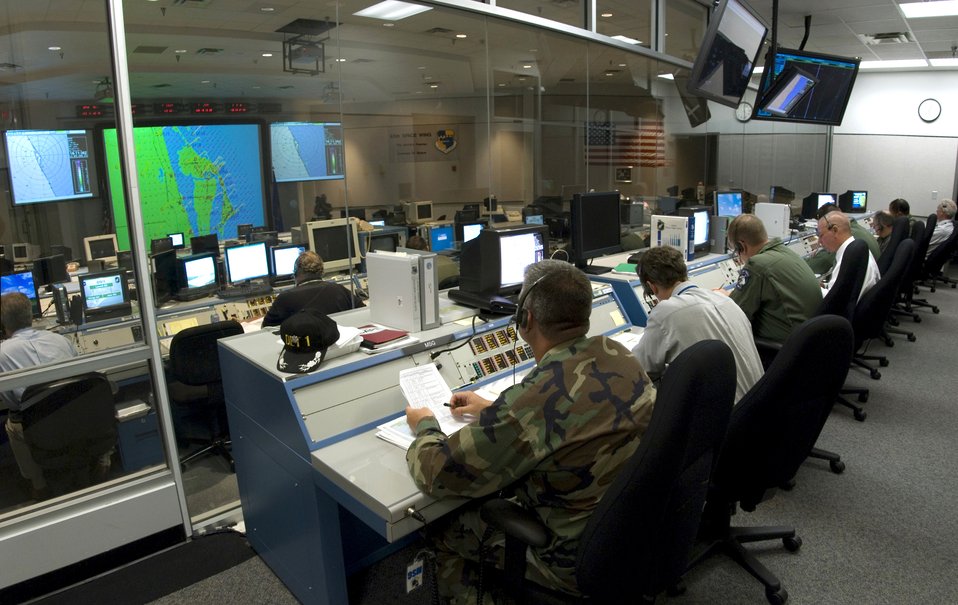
Florida ICE

Members of the 45th Space Wing follow launch procedures during an integrated crew exercise, or ICE, on Thursday, April 13, 2006, at Cape Canaveral Air Force Station, Fla. The ICE tests personnel practices, anomaly resolution procedures and team communications. This is the final step in preparation for an April 20 launch that will carry a commercial satellite into orbit using an Atlas launch vehicle.